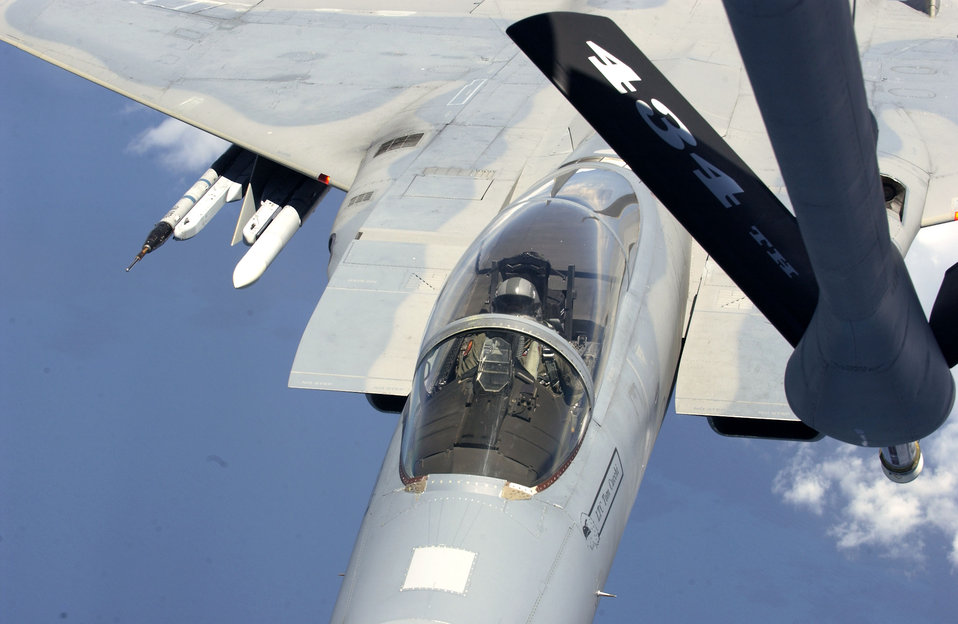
Refueling mission

An F-15 Eagle is refueled by a KC-135 Stratotanker from the 434th Air Refueling Wing during training near Jacksonville International Airport, Fla., on July 20. The F-15 is from the 125th Fighter Wing. The training helps aircrews from both units stay proficient in mid-air refueling.